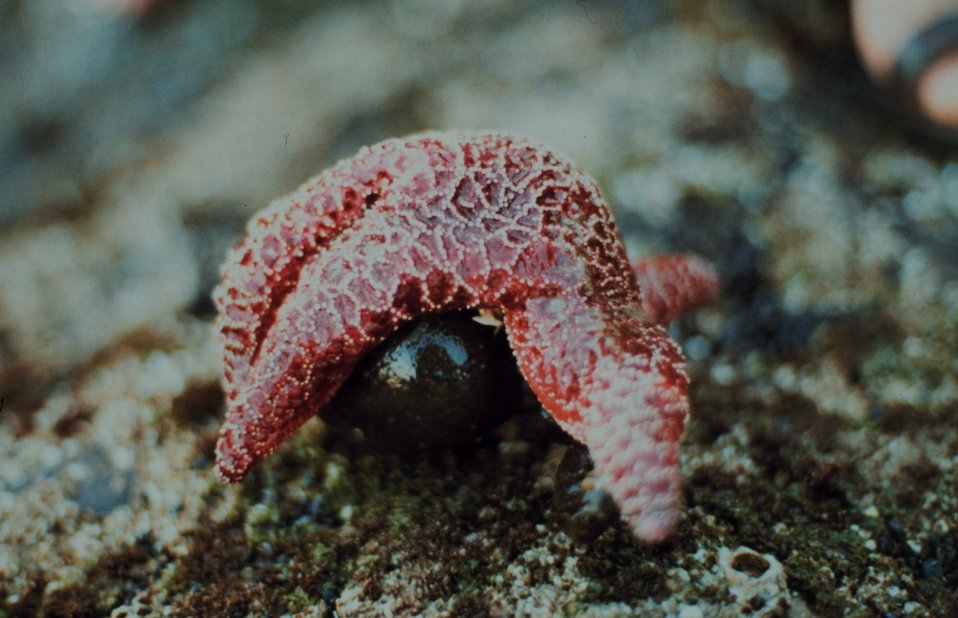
A starfish wrapped around a rock